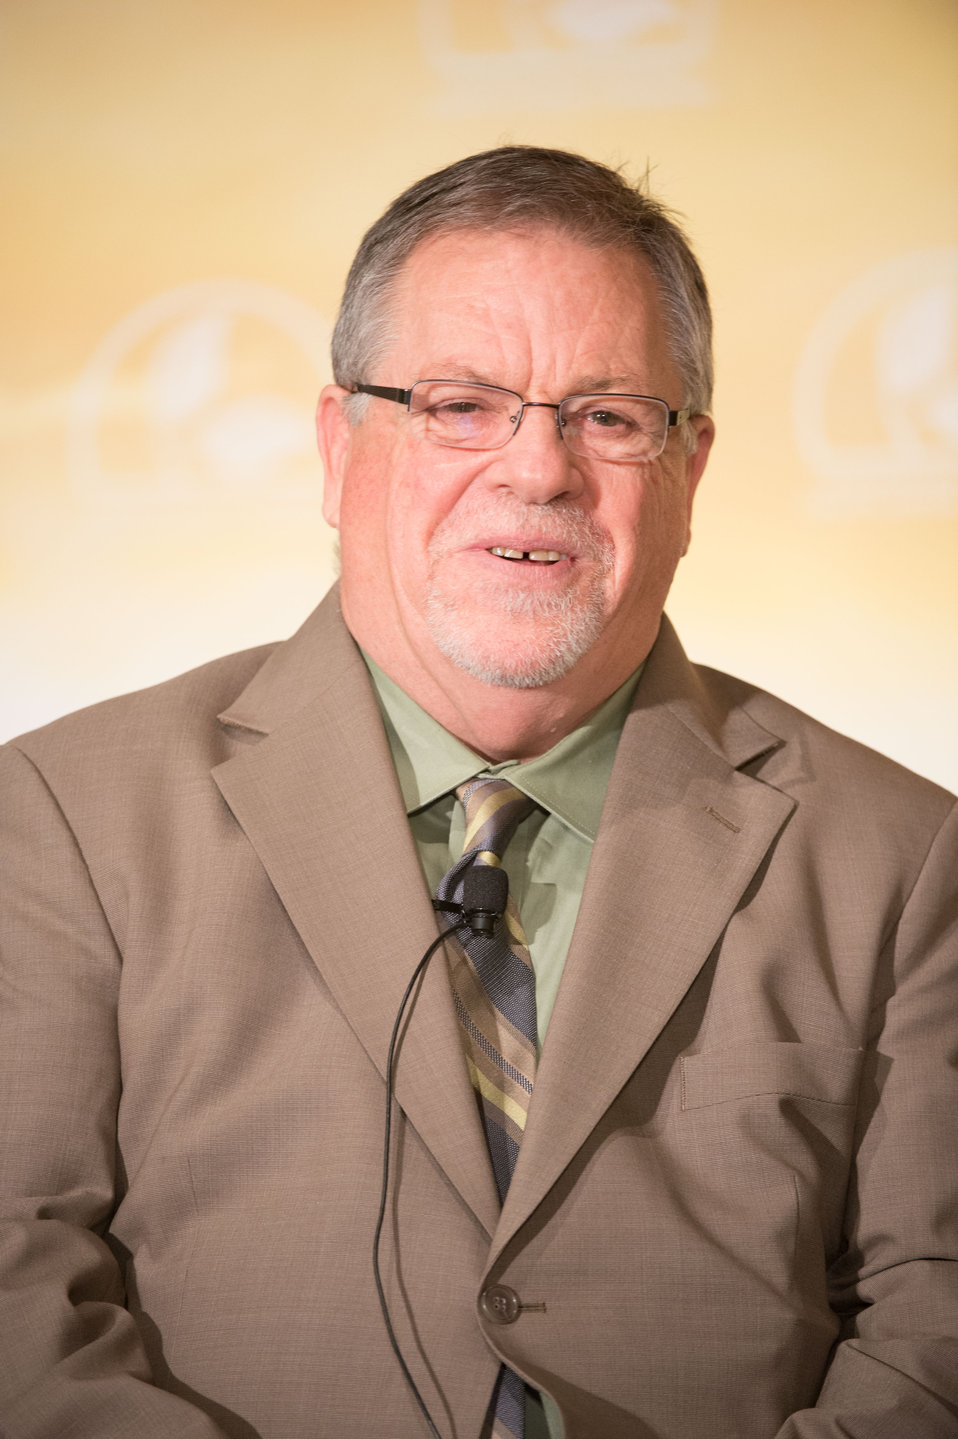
Young Farmers - Unlimited Opportunities panelist Veteran Coalition Executive Director and Farmer Michael O’Gorman at the 2014 Agricultural Outlook Forum in Arlington, VA., on Thursday, Feb. 20, 2014. The U.S. Department of Agriculture's (USDA) annual Agricultural Outlook Forum brings together the agricultural community to discuss policy, trade, science, rural development, and the economic outlook for the coming year. The Forum also focuses on forestry, health and nutrition issues, and the changing dynamics and face of rural America.USDA photo by Bob Nichols.